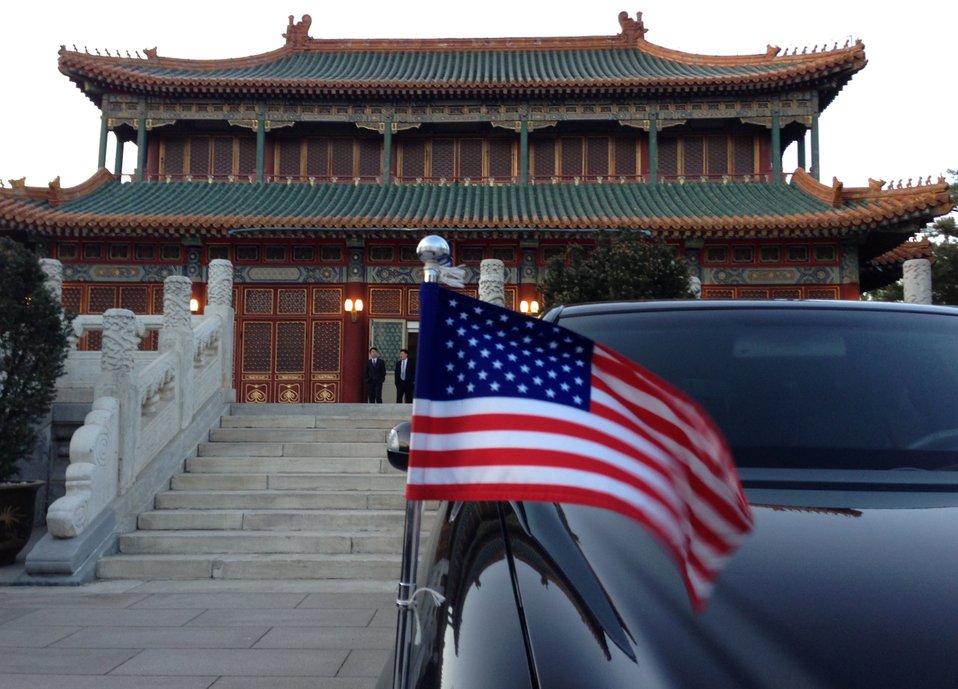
The American Flag Flutters on Secretary Kerry's Car

The American flag flutters on the car waiting to transport U.S. Secretary of State John Kerry after his meeting with Chinese Premier Li Keqiang at the Purple Light Pavilion in Beijing, China, on April 13, 2013.